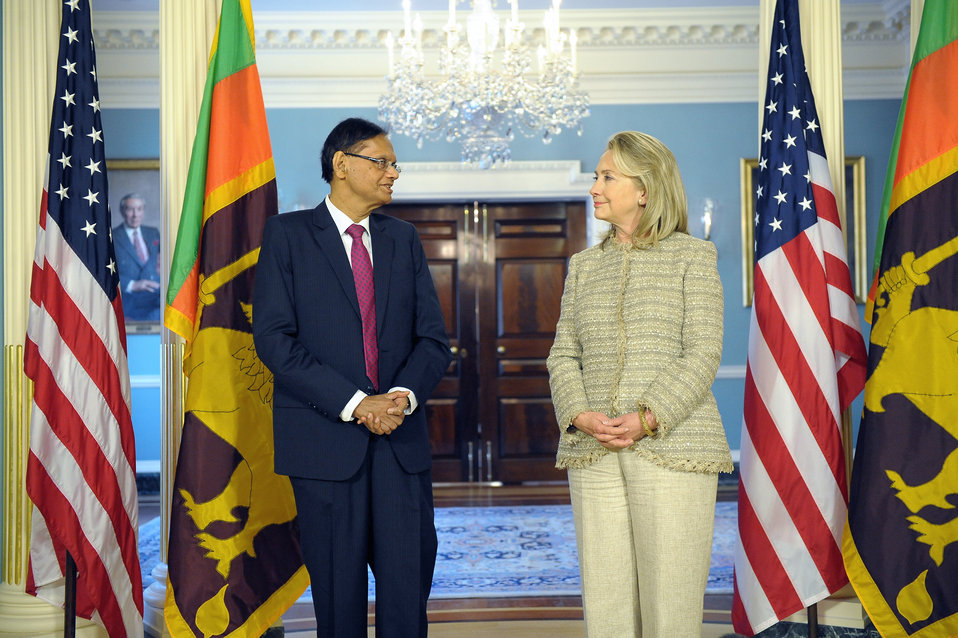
Secretary Clinton Meets With Sri Lankan External Affairs Minister Peiris

U.S. Secretary of State Hillary Rodham Clinton meets with Dr. Gamini Lakshman Peiris, Minister of External Affairs of the Democratic Socialist Republic of Sri Lanka, at the U.S. Department of State in Washington, D.C. on May 18, 2012.